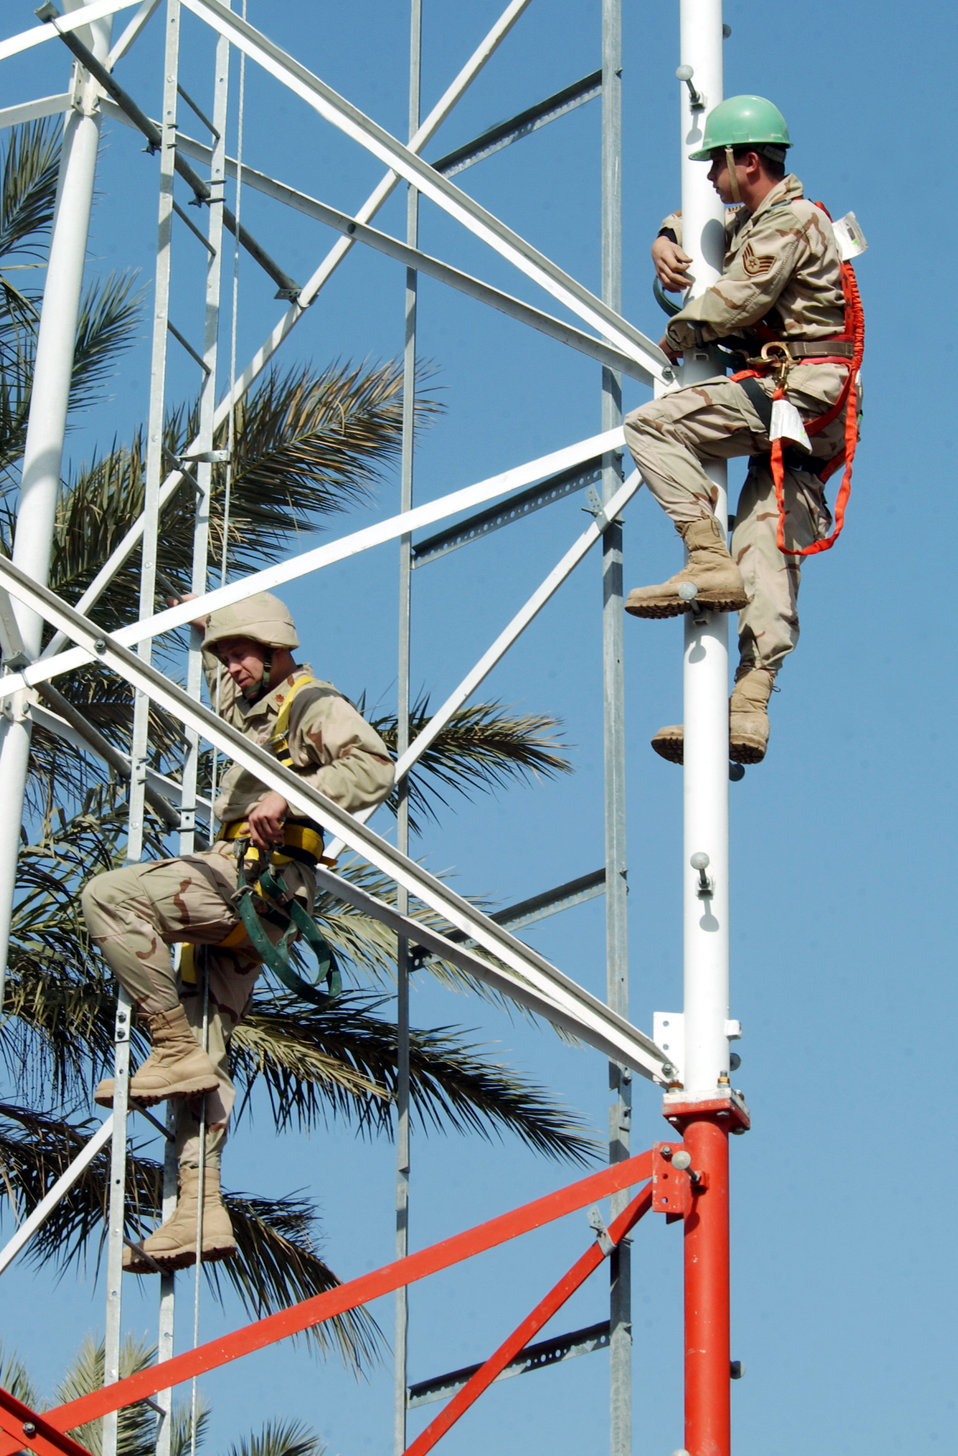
Tower of power

BAGHDAD INTERNATIONAL AIRPORT, Iraq -- Maj. Jon Petruzzi (left) and Staff Sgt. Jason Bulgin climb a 120-foot-tall radio tower here. Major Petruzzi is commander of the Expeditionary Communications Squadron, and Sergeant Bulgin is a cable antenna maintenance specialist with the squadron.